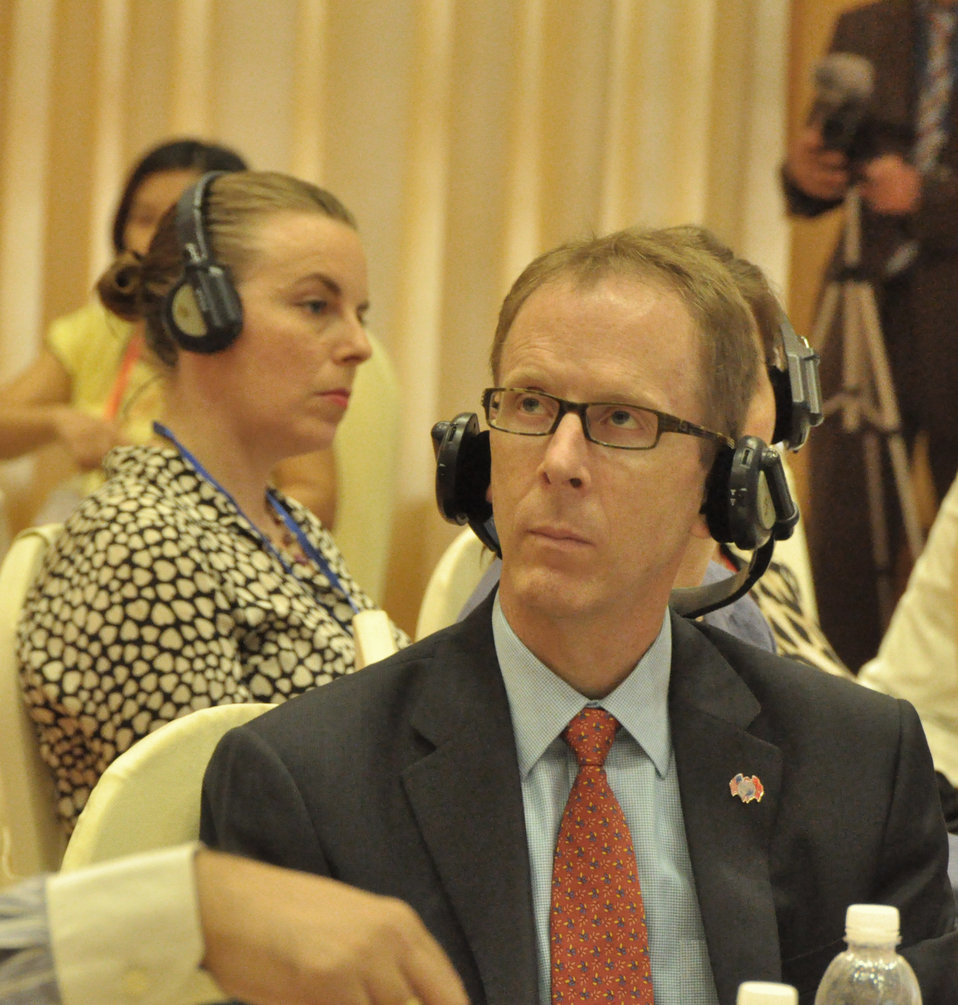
USAID Health Policy Initiative End of Project Workshop

Hanoi, August 14, 2013.